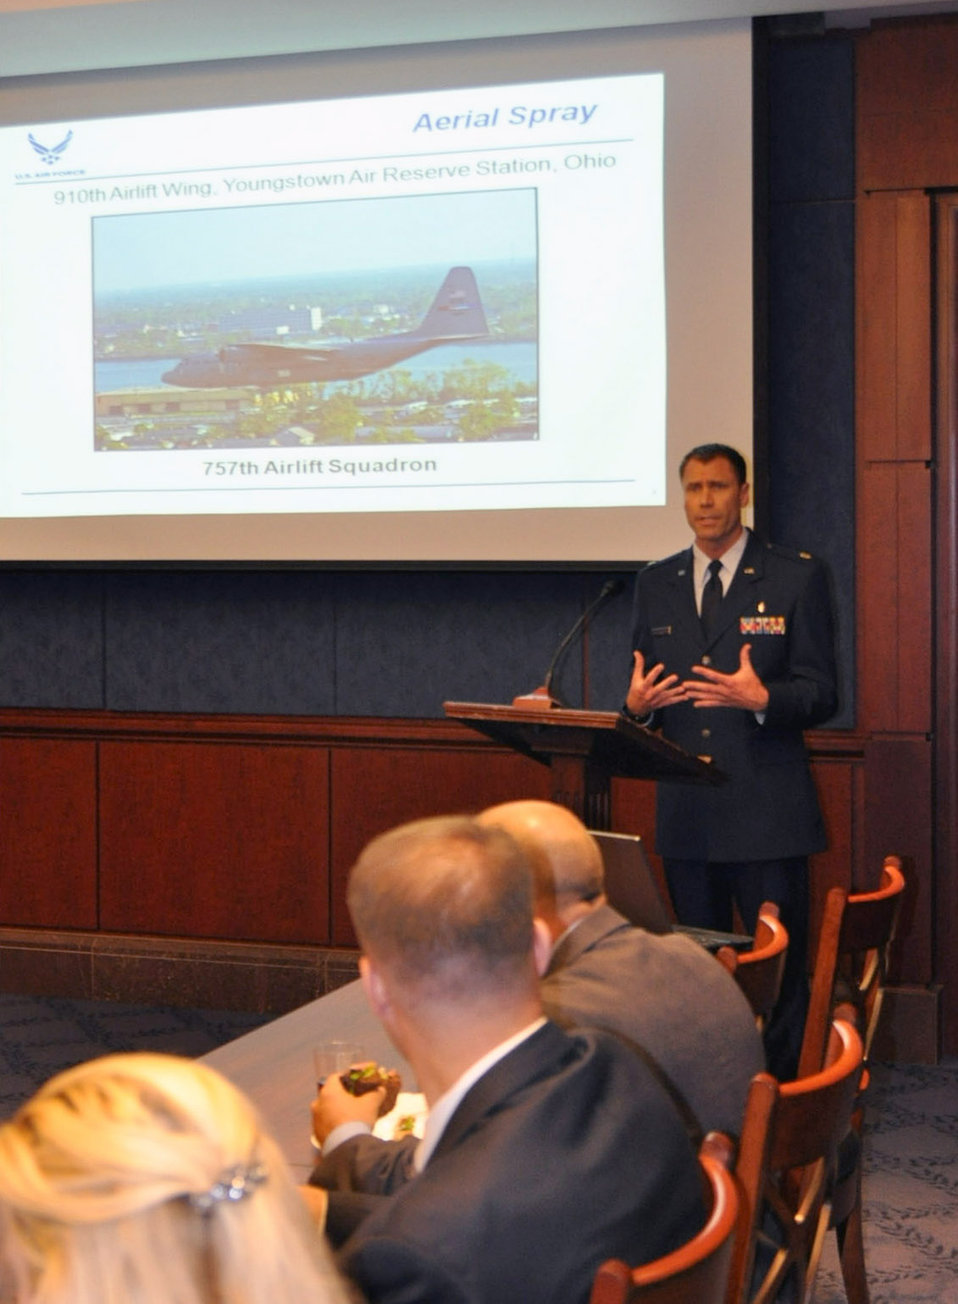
Reservists talk to Congress

Maj. Mark Breidenbaugh speaks to a group of congressional staffers June 8, 2010, in Washington. Major Breidenbaugh and a small team of reservists from the 910th Airlift Wing spoke to the group about the unit's aerial spray mission and the wing's recent operations in the Gulf of Mexico. Major Breidenbaugh is an entomologist assigned to the 910th Airlift Wing, based at Youngstown Air Reserve Station, Ohio.